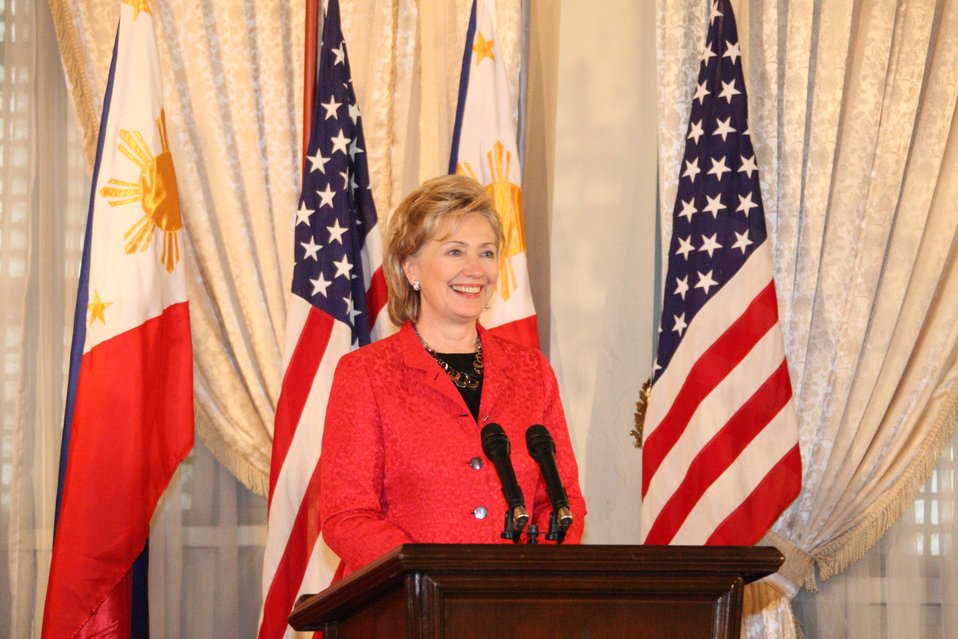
Secretary Clinton Speaks at a Forum

U.S. Secretary of State Hillary Rodham Clinton speaks at a forum in Manila, Philippines November 12, 2009.